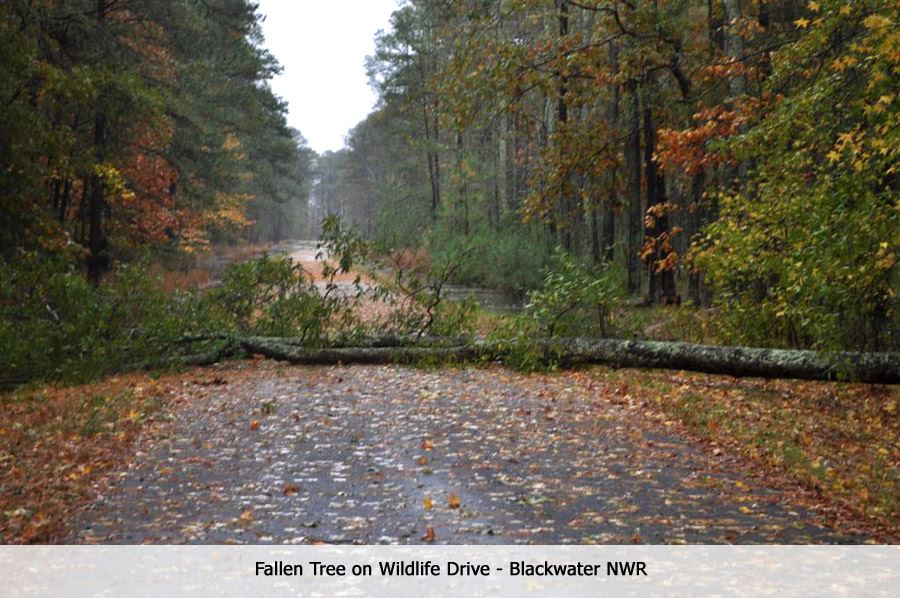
Downed tree at Blackwater National Wildlife Refuge - Oct. 30 (MD)

Wildlife Drive at Blackwater National Wildlife Refuge - Tuesday 10/30